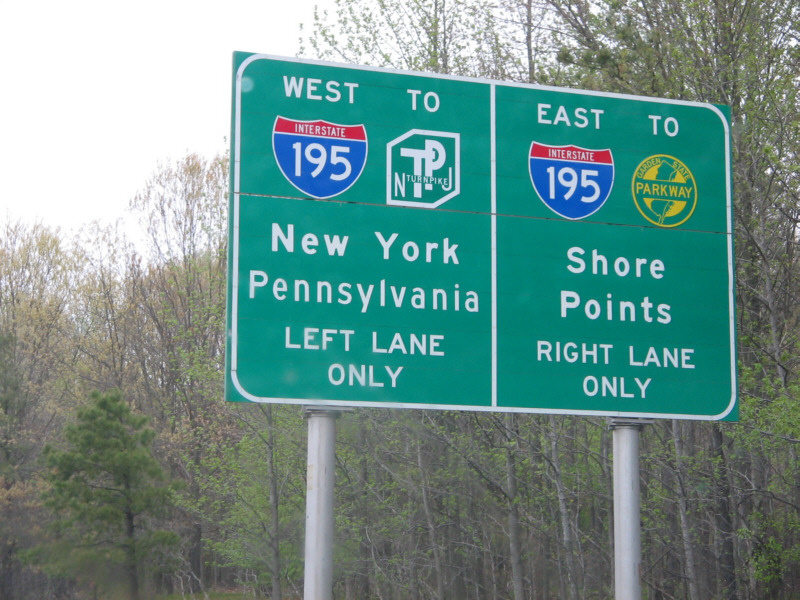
Advance Sign for I-195 (the real numbers '195' are too high in the shield on the actual sign, so I used my art program to show them how they really should be)